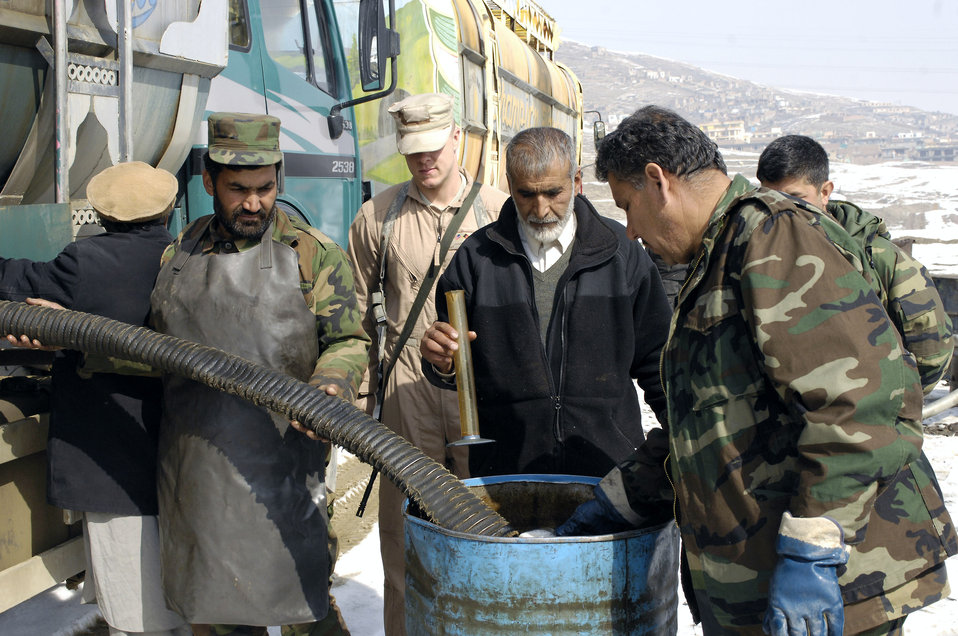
U.S., Afghan forces unite to open fuel depot

Afghanistan national army Lt. Col. Mohammad Adris captures fuel in a clear glass coffee mug as its offloaded from a fuels truck prior to accepting delivery Feb. 17 at Khuja Rawash in Kabul, Afghanistan. The inspector raises the mug, once full, looking for sediment. Colonel Adris is an operations officer and fuels tester.